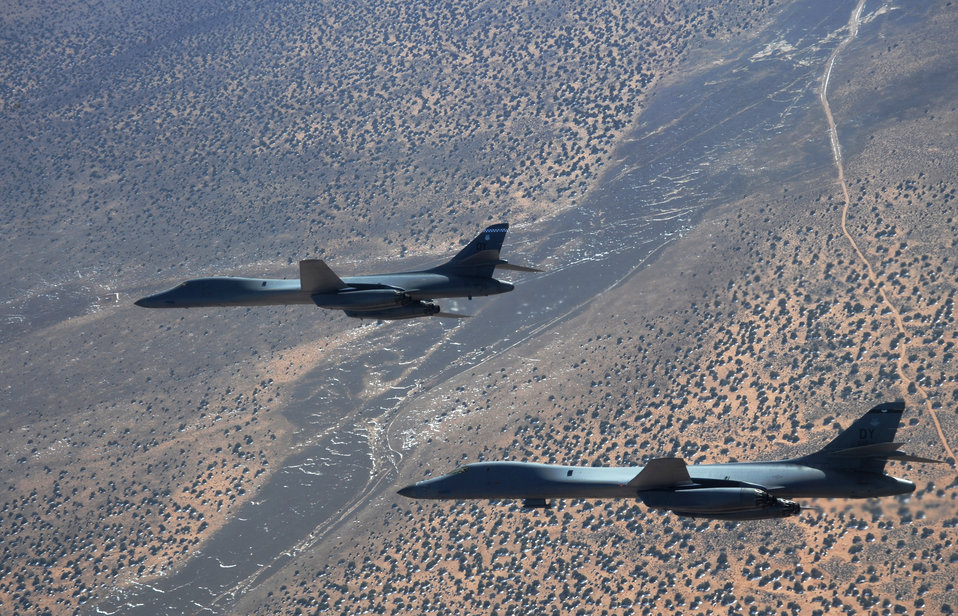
B1-B Training Mission

A two-ship formation of B-1B Lancers assigned to the 28th Bomb Squadron, Dyess Air Force Base, Texas, maneuver over New Mexico during a training mission Feb. 24, 2010.